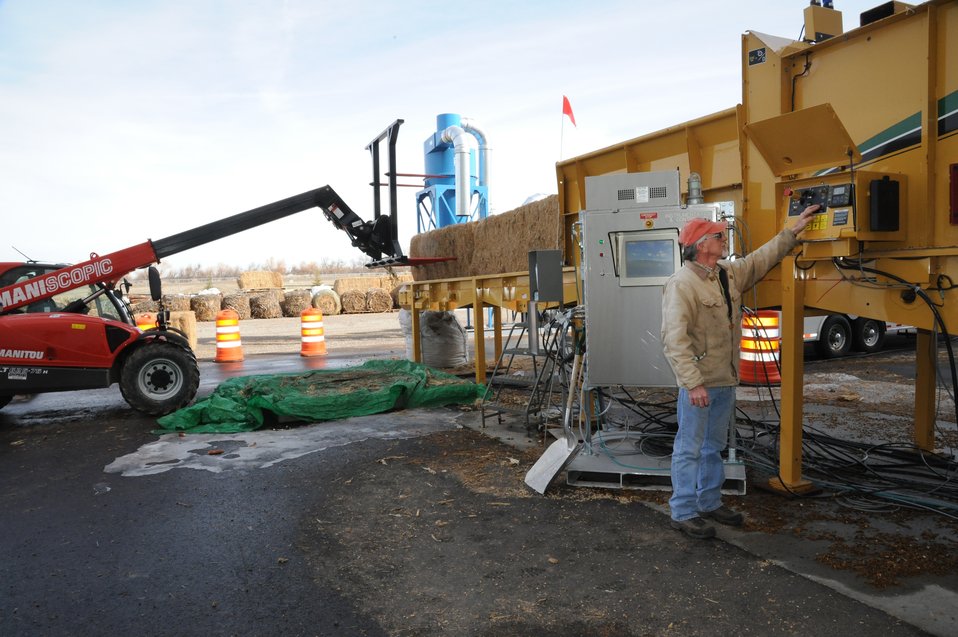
Idaho National Laboratory researchers are studying ways to economically process, transport and formulate raw biomass that will feed into a biofuels production facility.